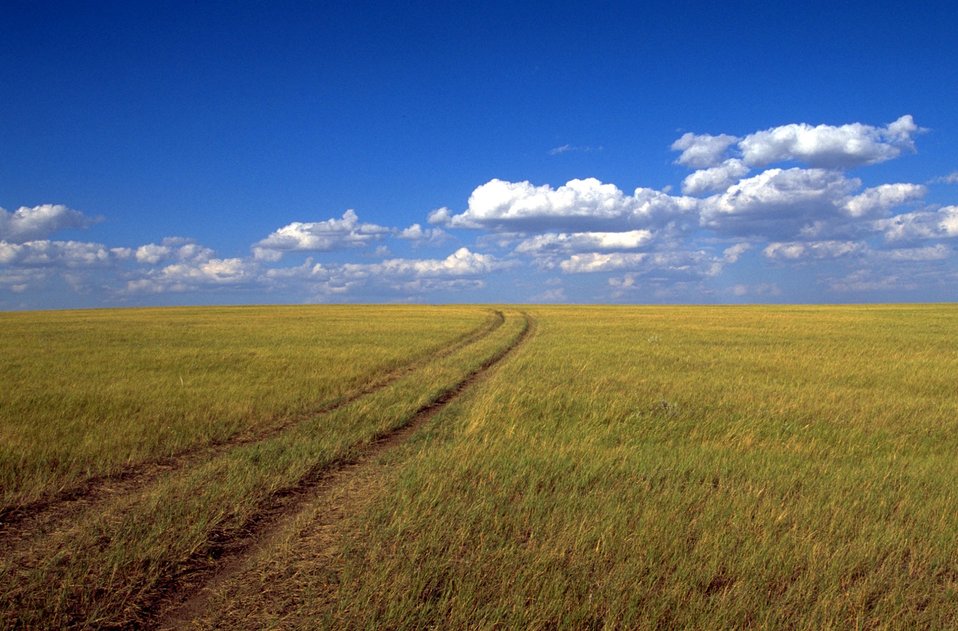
OHV Trail across grassland 40 miles north of Belle Fourche